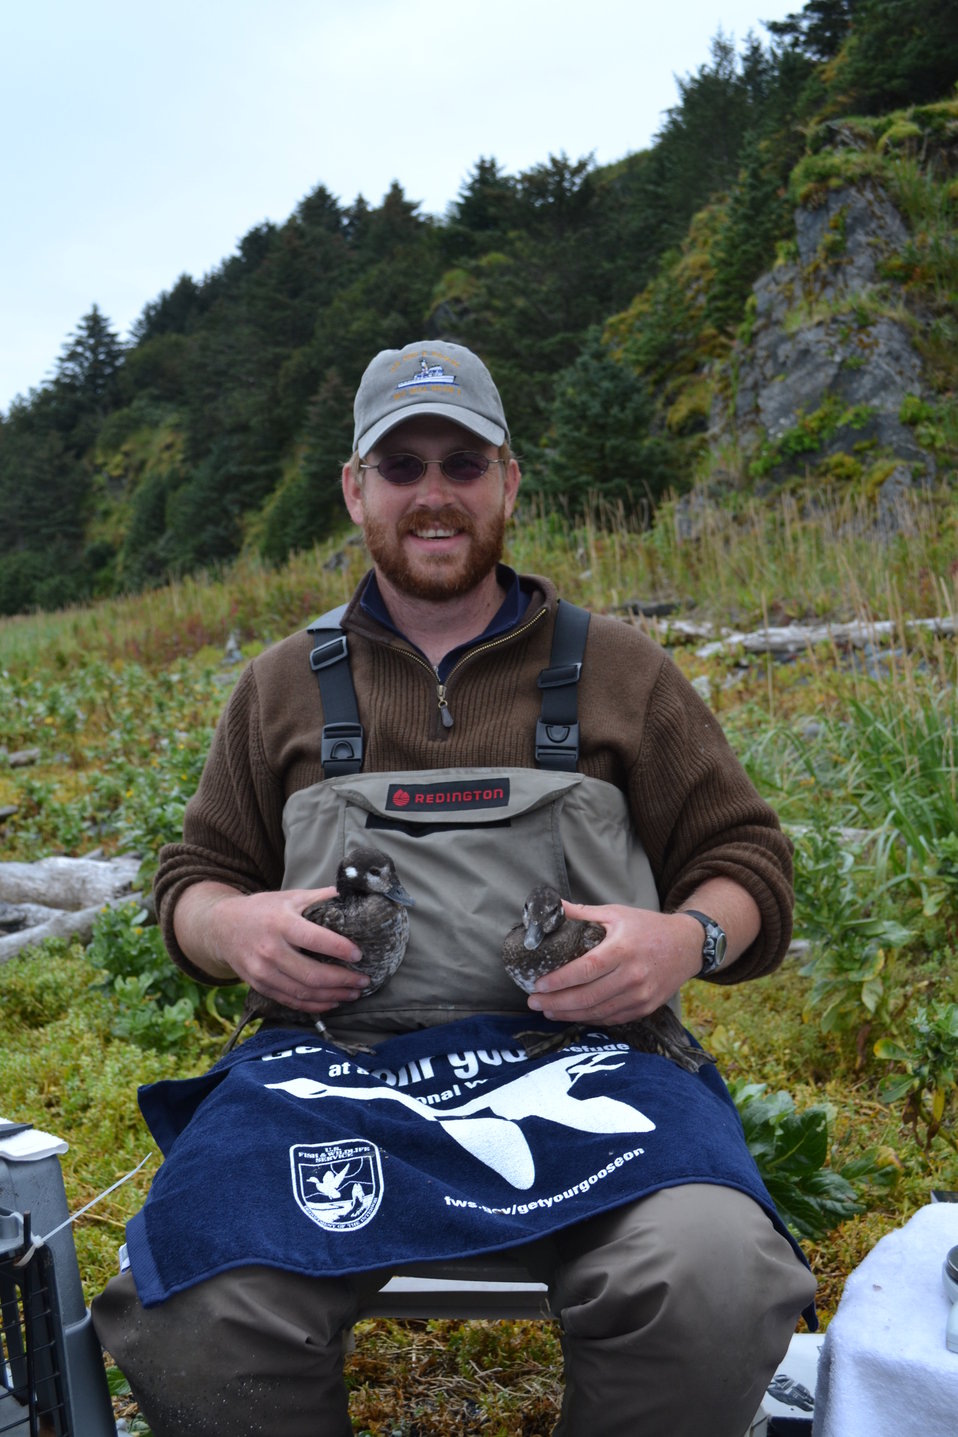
Get Your Goose On! - Alaska Style

USFWS Environmental Contaminants Biologisit Micah Miller with Harlequin Ducks

Credit: Katharine Studholme / USFWS

The Kodiak National Wildlife Refuge is a United States National Wildlife Refuge in the Kodiak Archipelago in southwestern Alaska, United States.

The Kodiak National Wildlife Refuge includes the southwestern two-thirds of Kodiak Island, Uganik Island, the Red Peaks area of Afognak Island and all of Ban Island in the archipelago. It encompasses 1,990,418 acres (8,054.94 km2).[2] The refuge is administered from offices in Kodiak.

The refuge contains seven major rivers and about 100 streams. It is a spawning ground for all six species of Pacific Ocean salmon, trout and several other fish species, as well as a nesting ground for 250 species of bird, many of which feed on salmon. The refuge has only six native species of mammals: Kodiak brown bear, red fox, river otter, ermine, little brown bat and tundra vole. The non-native mammals Sitka deer, mountain goat, Roosevelt elk, snowshoe hare and beaver were introduced to the archipelago between the 1920s and 1950s and are now hunted and trapped.

The climate of the refuge is that of southern Alaska, mild and rainy. Many areas in the refuge are densely forested with Sitka Spruce at lower elevations. There are grasslands in drier areas and at higher elevations. The refuge contains several small glaciers.